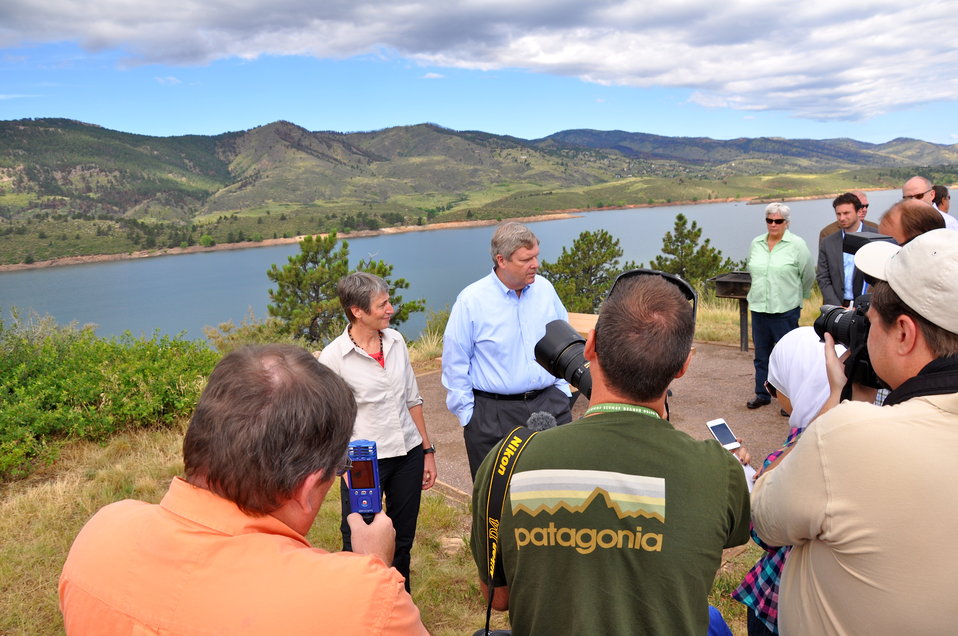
Agriculture Secretary Tom Vilsack and Interior Secretary Sally Jewell answer questions from the press at the Memorandum of Understanding (MOU) signing held at the Horsetooth Reservoir in Fort Collins, CO on Jul. 19, 2013. This MOU will facilitate activities such as wildfire risk reduction through forest thinning, prescribed fire and other forest health treatments; minimizing post-wildfire erosion and sedimentation; and restoring areas that are currently recovering from past wildfires through tree planting and other habitat improvements.